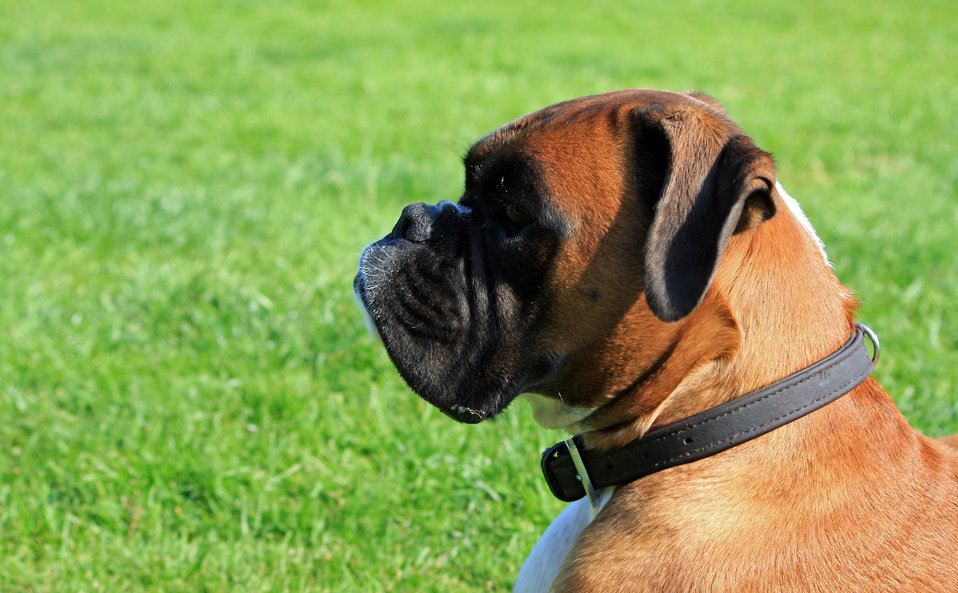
Boxer dog

Close-up profile image of a boxer dog with green grass background.